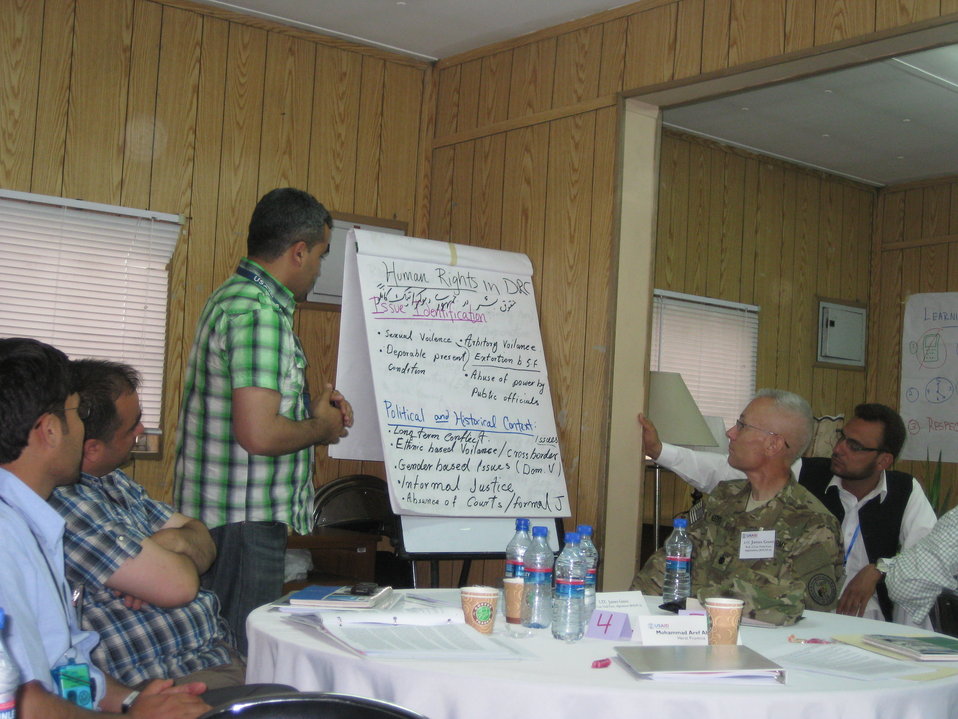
Afghan Youth Voices 028